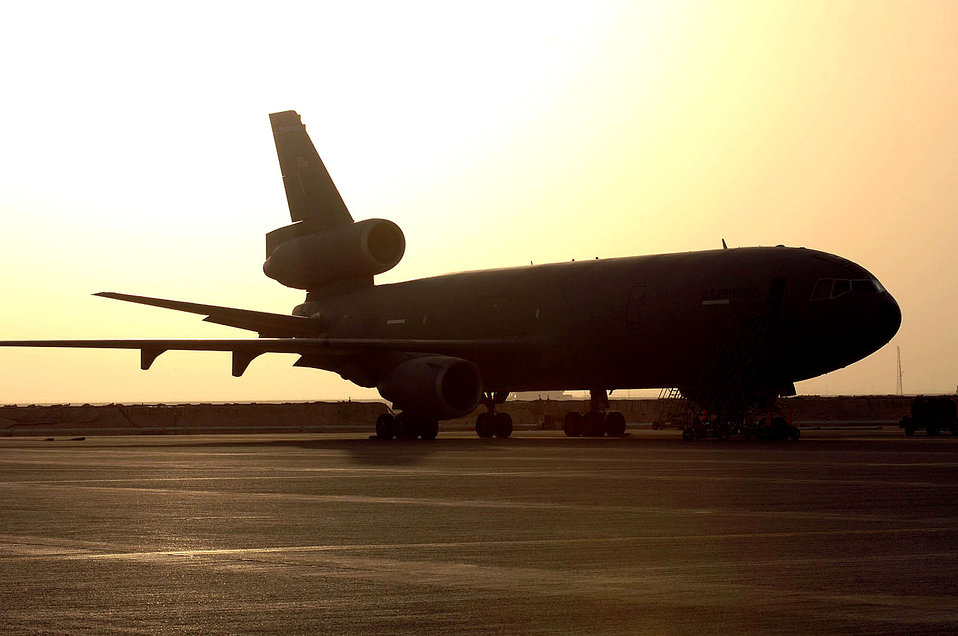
Desert mission

SOUTHWEST ASIA (AFPN) -- A KC-10 Extender rests on a parking ramp Jan. 25 waiting for its next refueling mission to support coalition aircraft supporting Operation Enduring Freedom, Operation Iraqi Freedom and the Combined Joint Task Force-Horn of Africa.